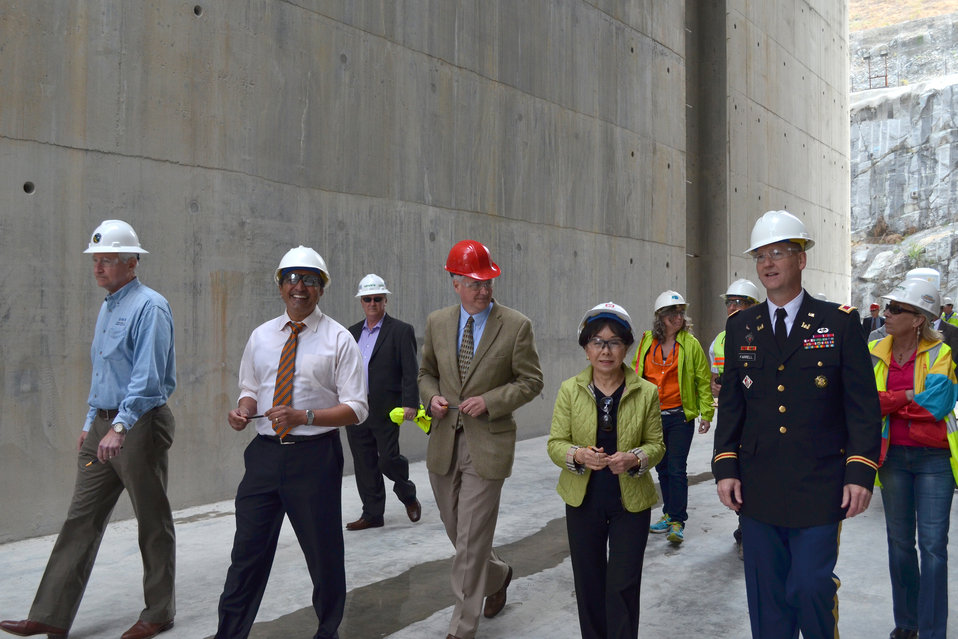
Corps hosts elected officials, partners to celebrate progress on Folsom spillway

(From right) U.S. Army Corps of Engineers Sacramento District commander Col. Michael Farrell talks to Rep. Doris Matsui, Rep. Tom McClintock, Rep. Ami Bera and Department of Water Resources director Mark Cowin about the project as they walk through one of the bays for the new auxiliary dam April 26, 2014, at Folsom Dam in Folsom, Calif. Contractors for the Corps have placed more than 100,000 cubic yards of concrete since May 2012 to erect the new dam. Elected officials joined the Corps and their project partners for a media event and site tour to highlight the project’s transition from concrete placement to gate installation later this summer. The new auxiliary spillway will allow operators to release water earlier and more quickly during large storm events when it’s completed, slated for October 2017. Photo cropped for emphasis.